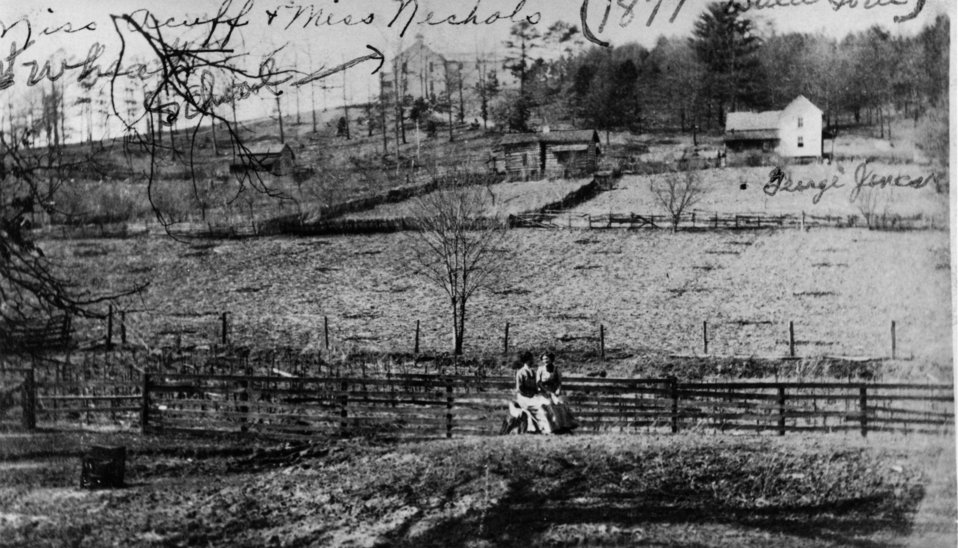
Early settlers at Oak Ridge